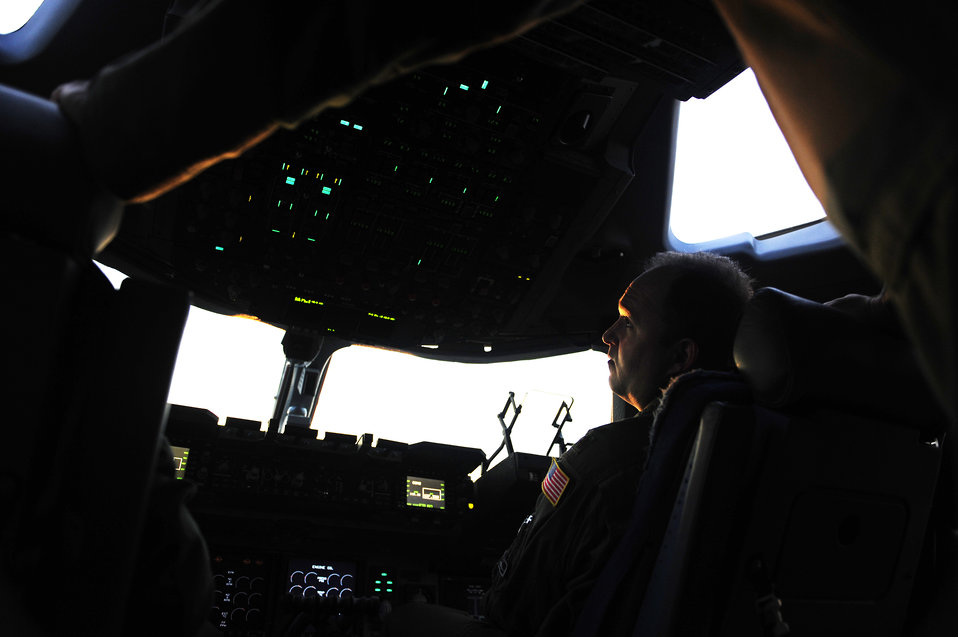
Haiti Relief Operations

Maj. Mark Smith conducts pre-flight operations Jan. 14, 2010, at Charleston Air Force Base, S.C., prior to departing in support of relief efforts to Haiti. Major Smith is a reservist with the 317th Airlift Squadron.